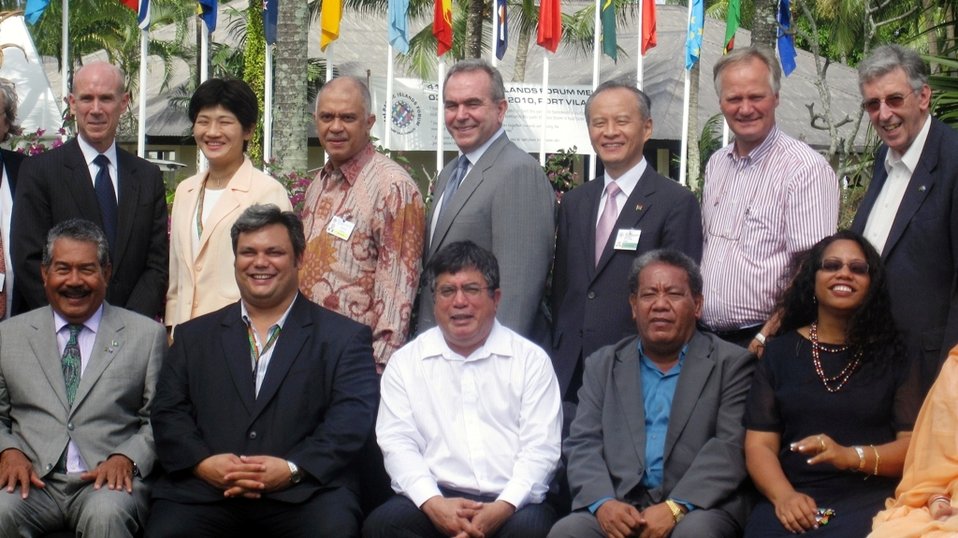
Assistant Secretary Campbell With Pacific Leaders and Member Nations of the Pacific Island Forum (PIF) Post Forum Dialogue

East Asian and Pacific Affairs Assistant Secretary Kurt M. Campbell poses for a photo with Pacific leaders and member nations of the Pacific Island Forum (PIF) Post Forum Dialogue in Port Vila, Vanuatu, on August 5, 2010.